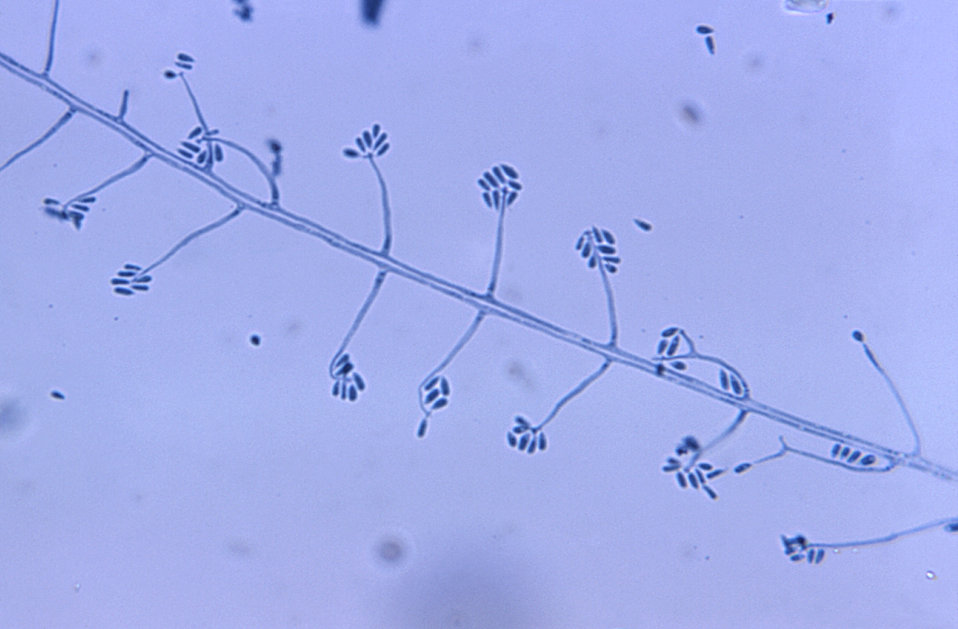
Magnified 500X, this photomicrograph revealed the presence of Sporothrix sp. fungal organisms that were isolated from a peat moss specimen.